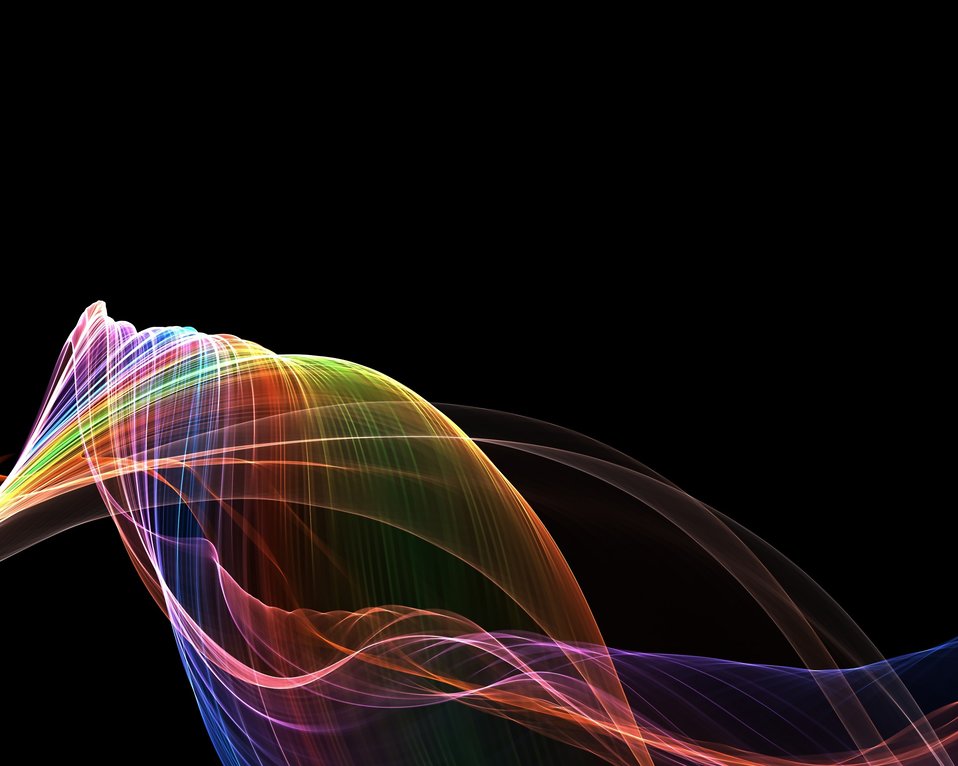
Rainbow ribbon background

Rainbow thread ribbon designed on a black background..